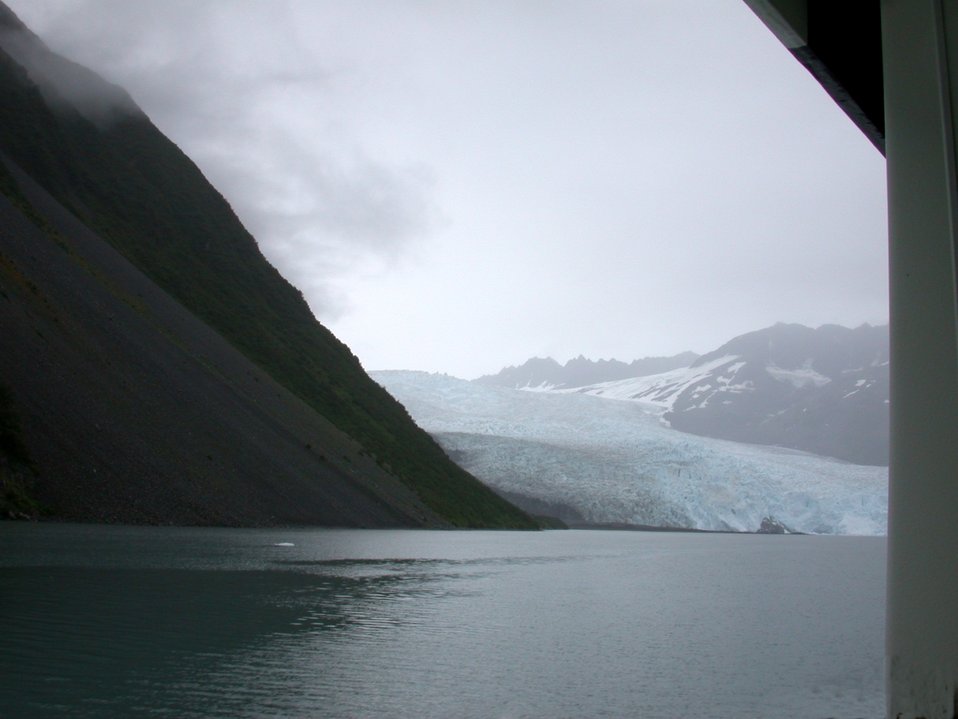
Aialik Glacier in Kenai Fjords.